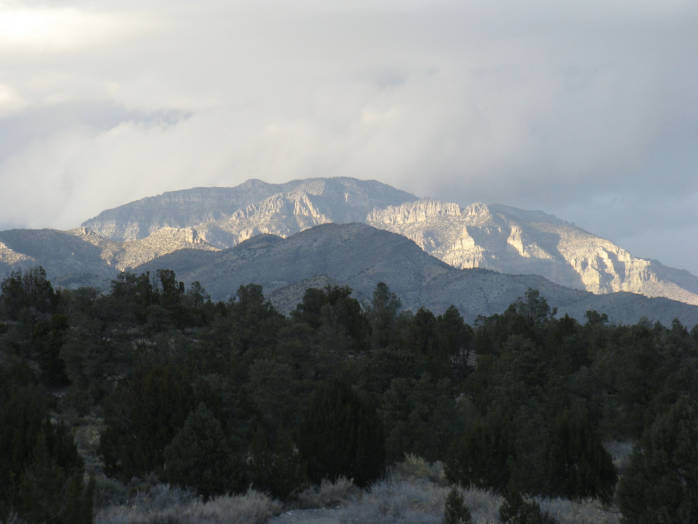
Desert National Wildlife Refuge, NV